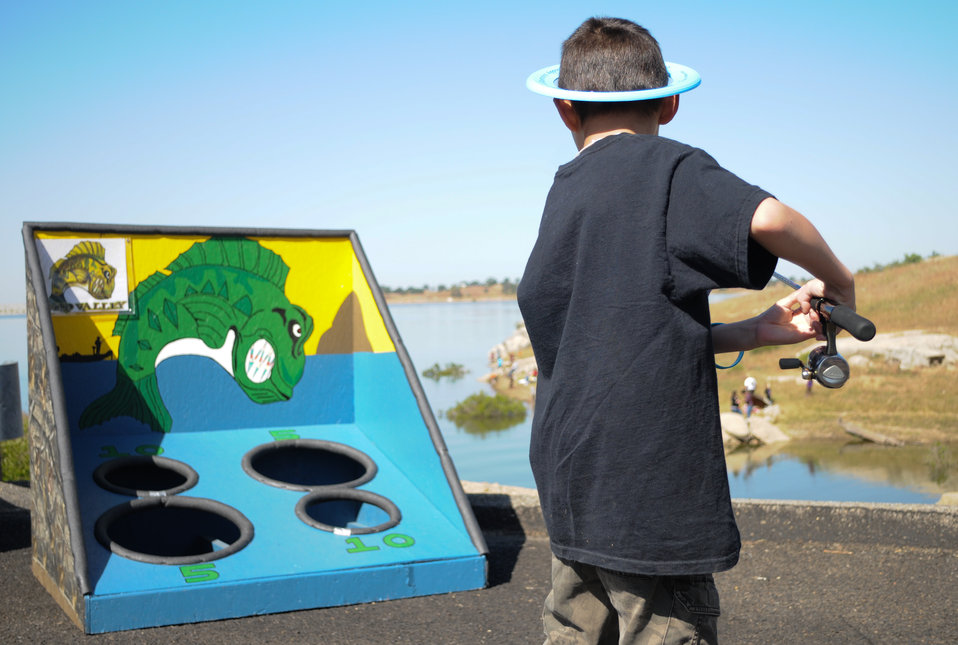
Kids Fishing Day at Hensley Lake

HENSLEY LAKE, Calif. (April 30, 2011) – A young Hensley Lake park visitor practices his cast during the 15th annual Kids Fishing Day here April 30. The Sacramento District’s Hensley and Eastman lakes take turns hosting the event, which provides free loaner gear and clinics on fishing techniques and water safety to help connect kids with the outdoors.